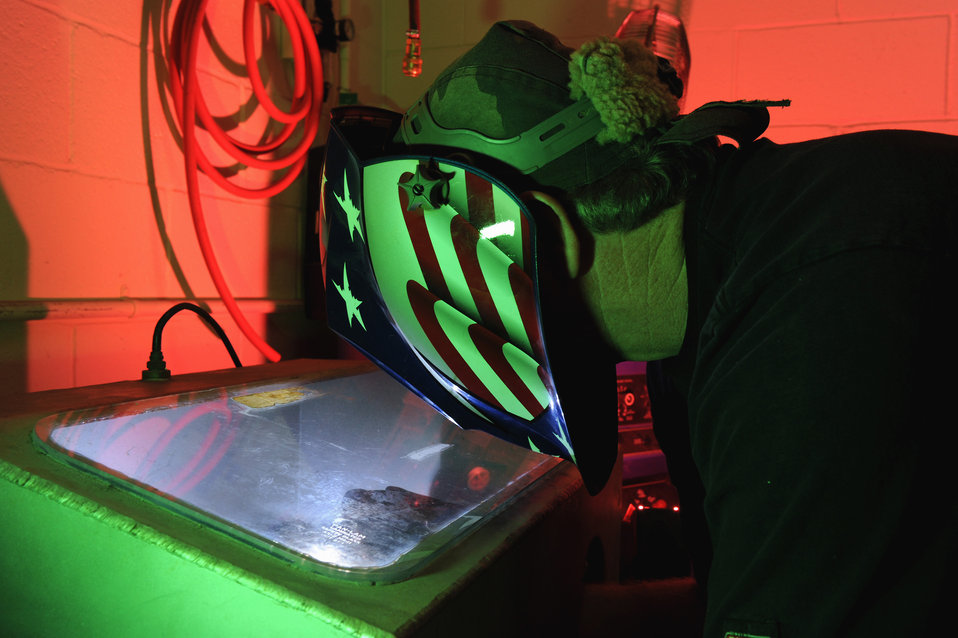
Hot spot at Nellis

Randy Cherland uses a purge chamber to weld a jet engine augmenter nozzle support April 16 at Nellis Air Force Base, Nev. He is a metals technician with the 57th Components Maintenance Squadron. The 57th CMS is responsible for the structural maintenance of all aircraft assigned to the 57th Wing.